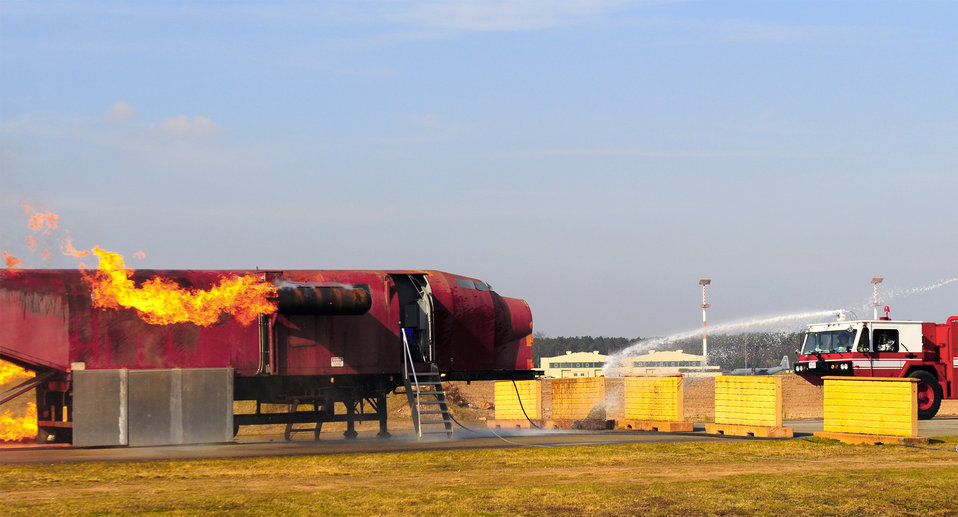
Silver Flag

Air Force firefighters douse a simulated engine fire March 15, 2011, during Silver Flag at Ramstein Air Base, Germany.